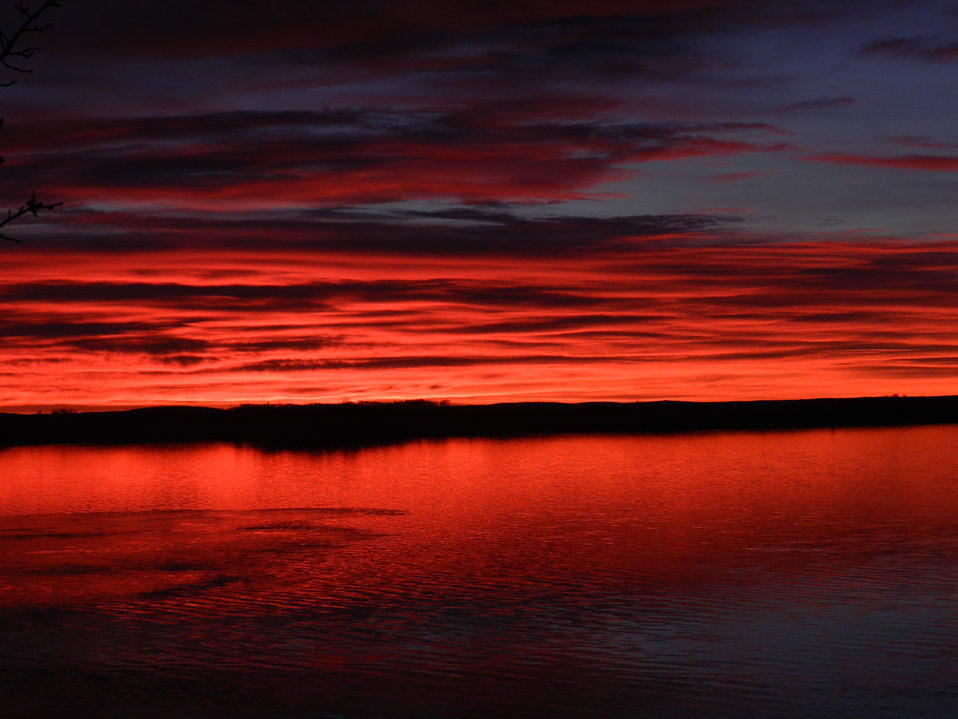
Sunrise at Waubay National Wildlife Refuge

The sky glows red over Waubay National Wildlife Refuge. This photo was taken from the Visitor Center, looking southeast. (November 20, 2012)